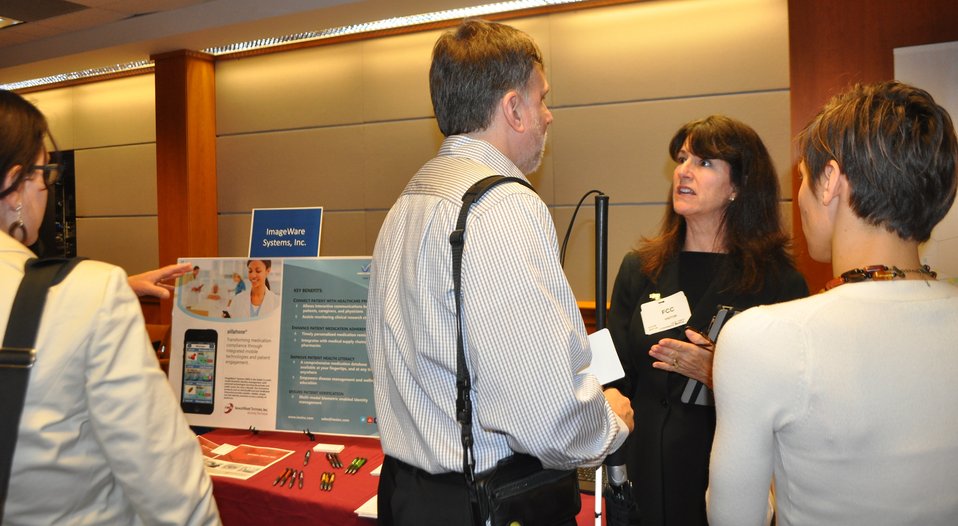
12.6.13 mHealth Innovation Expo

FCC mHealth Innovation Expo.